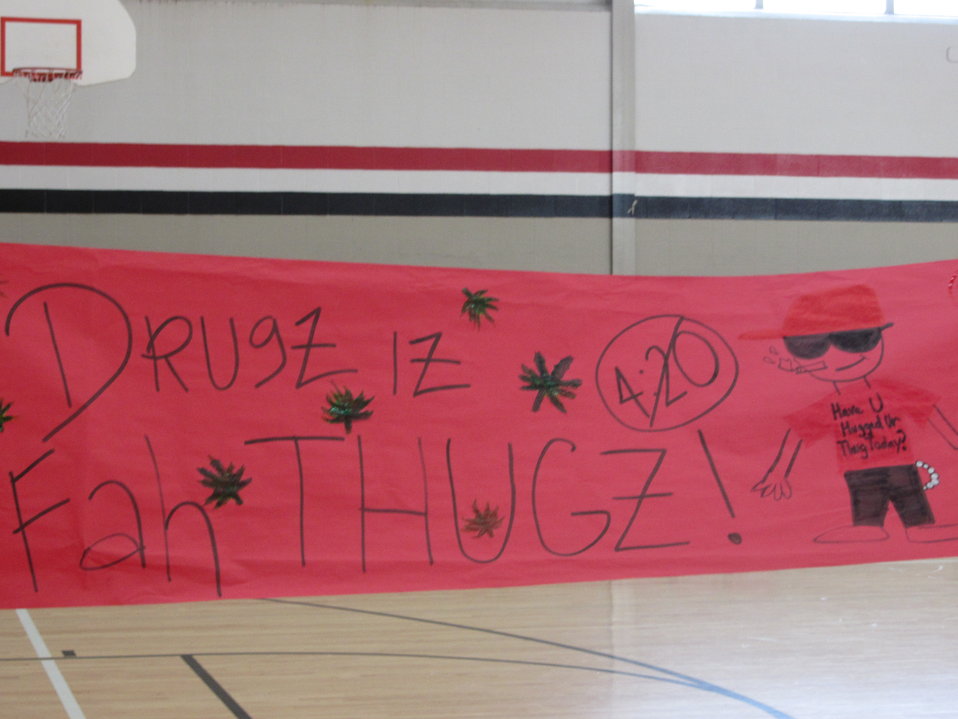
Freshman NDFW 2013 Poster

Galveston City, Tex. Bay Area Council on Drug Abuse holds NDFW Event O'Connell Preparatory School where the ninth graders completed poster